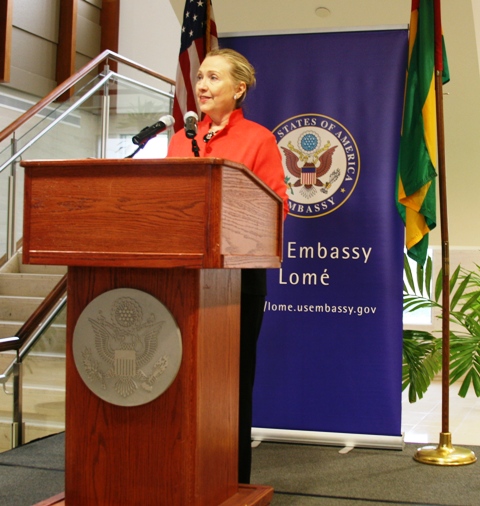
Secretary Clinton Speaks With Staff and Families at Embassy Lome

U.S. Secretary of State Hillary Rodham Clinton speaks with the staff and families of U.S. Embassy Lome in Lome, Togo, on January 17, 2012.